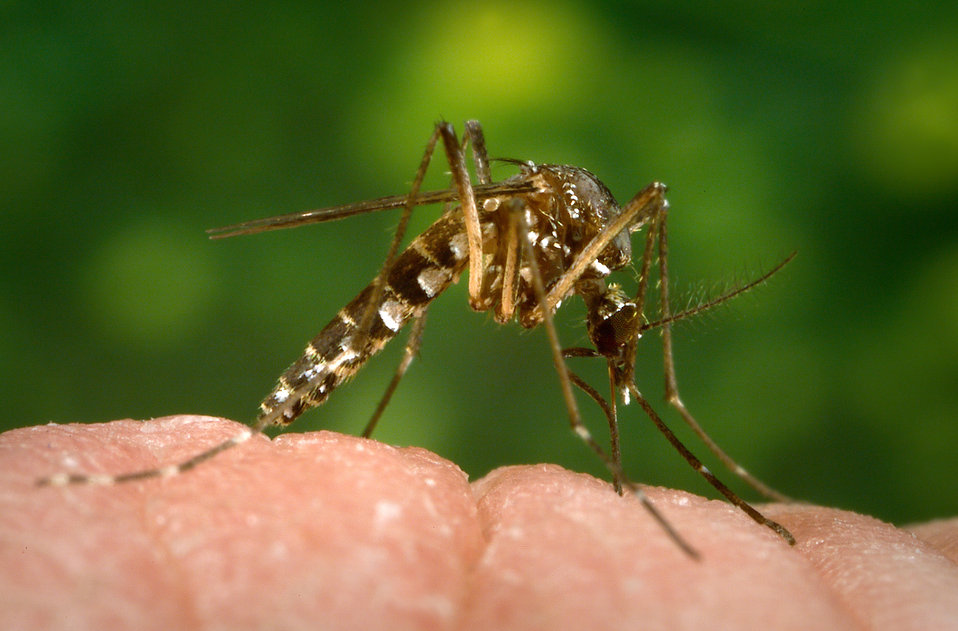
This 2006 photograph depicted a female Aedes aegypti mosquito as she was in the process of beginning the process of acquiring a blood meal from its human host, after having penetrated the skin surface with the sharply-pointed "fascicle". Normally, this female would be obtaining her blood from an unsuspecting host, but in this case, the CDC's biomedical photographer, James Gathany, had volunteered his own hand in order to entice the insect to alight, and feed. As it would fill with blood, the abdomen would become distended, thereby, stretching the exterior exoskeletal surface, thereby, causing it to become transparent, and allowing the collecting blood to become visible as an enlarging red mass. See PHIL # #8923, for this mosquito's appearance in its abdominally-distended state.